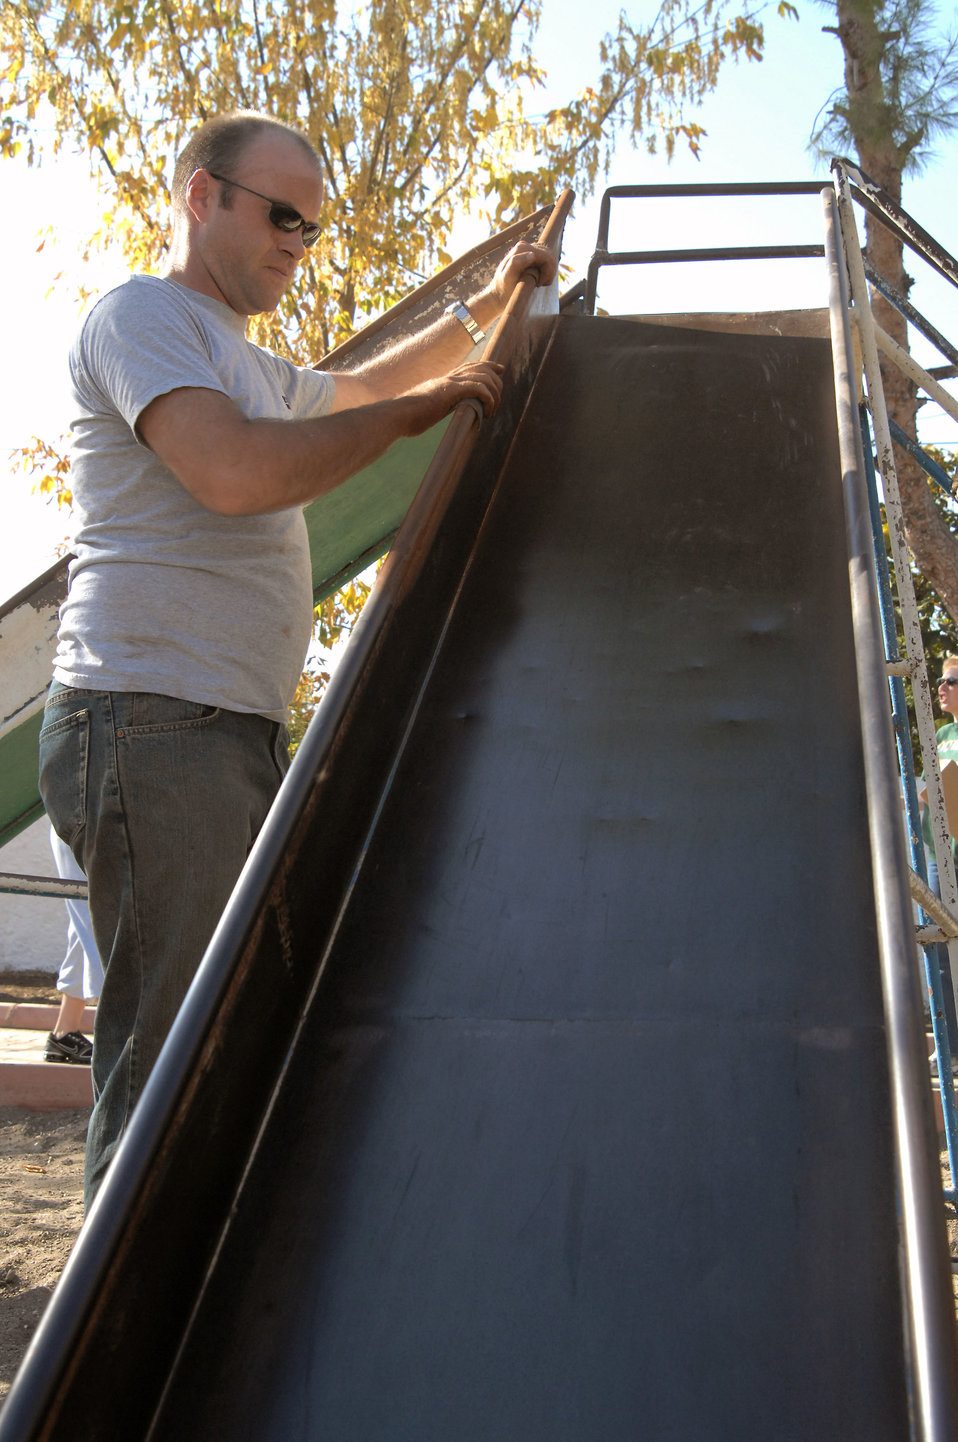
Incirlik volunteers strengthen community

Staff Sgt. Christopher Self sands rust off a slide at an Incirlik Village park Nov 15 at Incirlik Air Base, Turkey. Sergeant Self was among the estimated 75 volunteers present who helped the Incirlik Air Base Chapel staff renovate the park. Sergeant Self is assigned to the 39th Logistics Readiness Squadron.